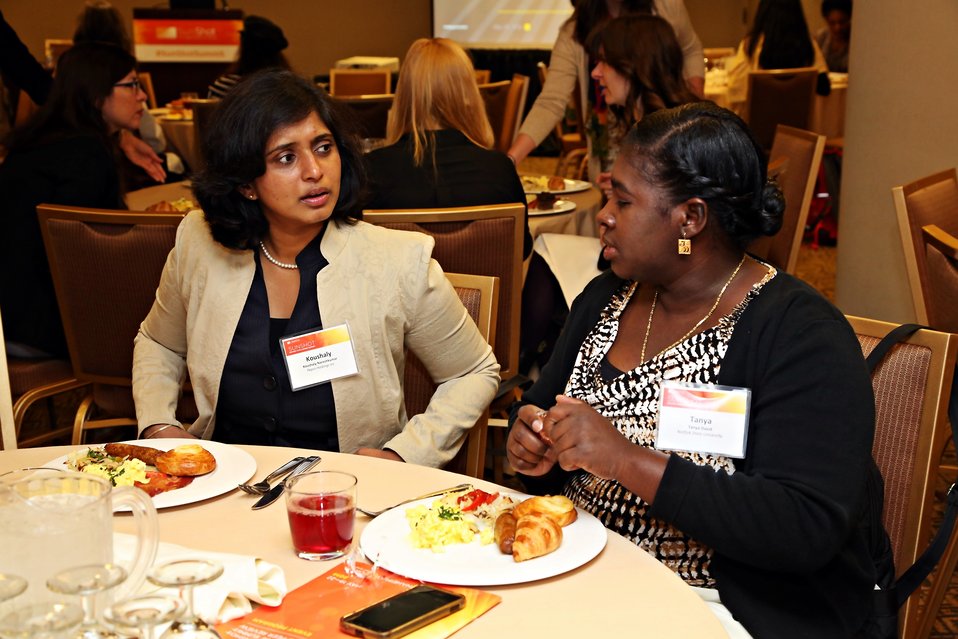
Women in Solar Breakfast 1

Attendees at the Women in Solar Breakfast.